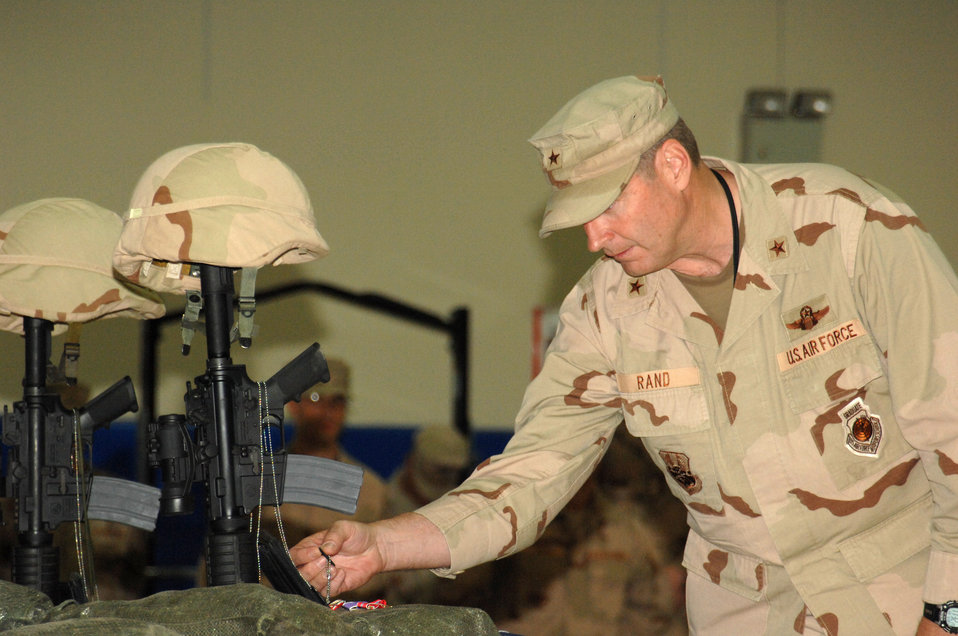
Final tributes paid to Airmen killed in Iraq

Brig. Gen. Robin Rand, 332nd Air Expeditionary Wing commander at Balad Air Base, Iraq, pays his respects during a memorial ceremony June 8 honoring Special Agents Tech. Sgt. Ryan Balmer and Staff Sgt. Matthew Kuglics at Kirkuk Regional Air Base, Iraq. The agents were killed in action June 5 while supporting Operation Iraqi Freedom.